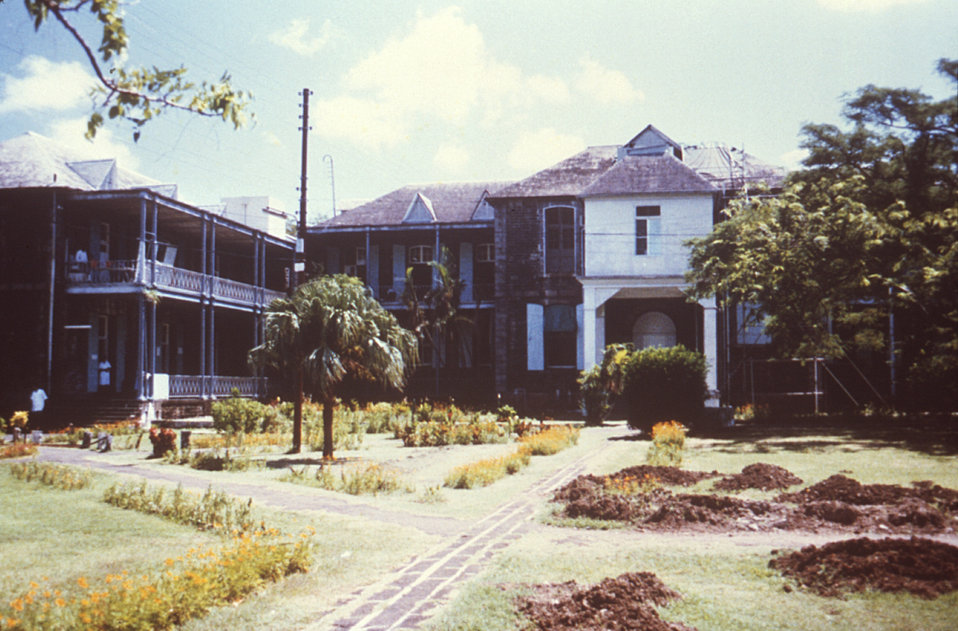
This 1980 photograph depicts the men's ward and surgical building of the Port Louis, Mauritius Civil Hospital.